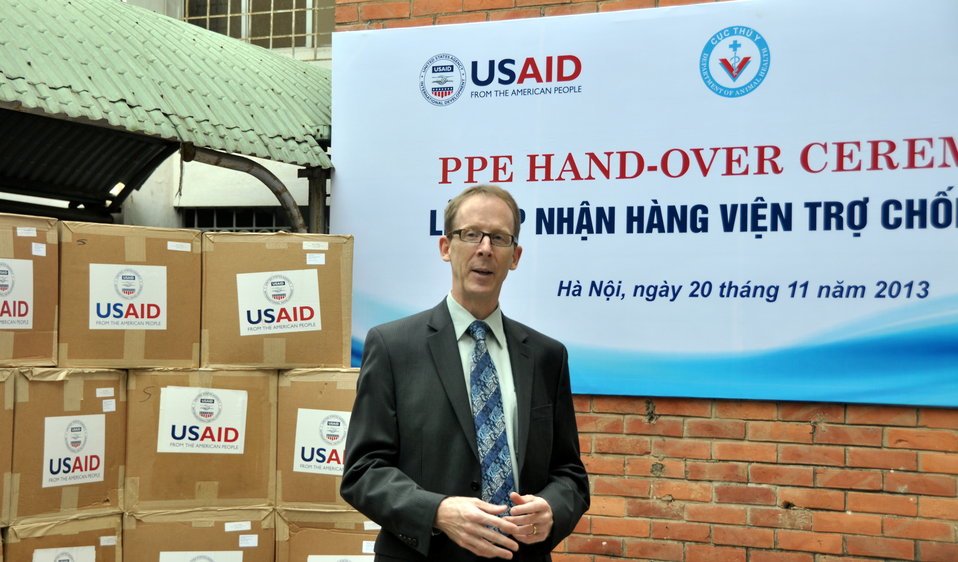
USAID Mission Director Joakim Parker speaks at the personal protective equipment handover ceremony.

Hanoi, November 20, 2013.